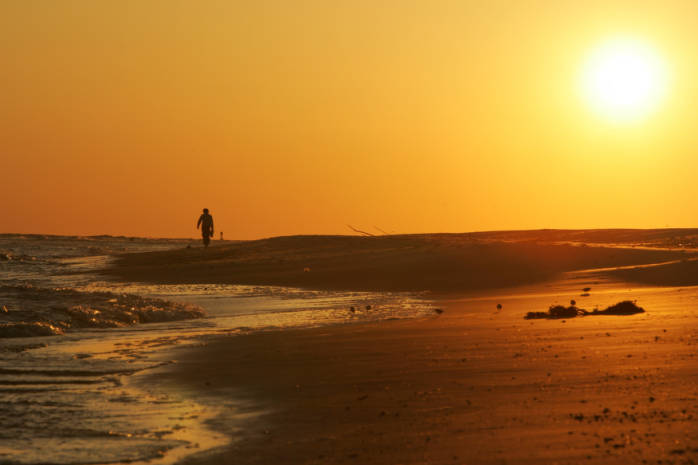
Alabama Sunset at Bon Secour NWR, USFWS